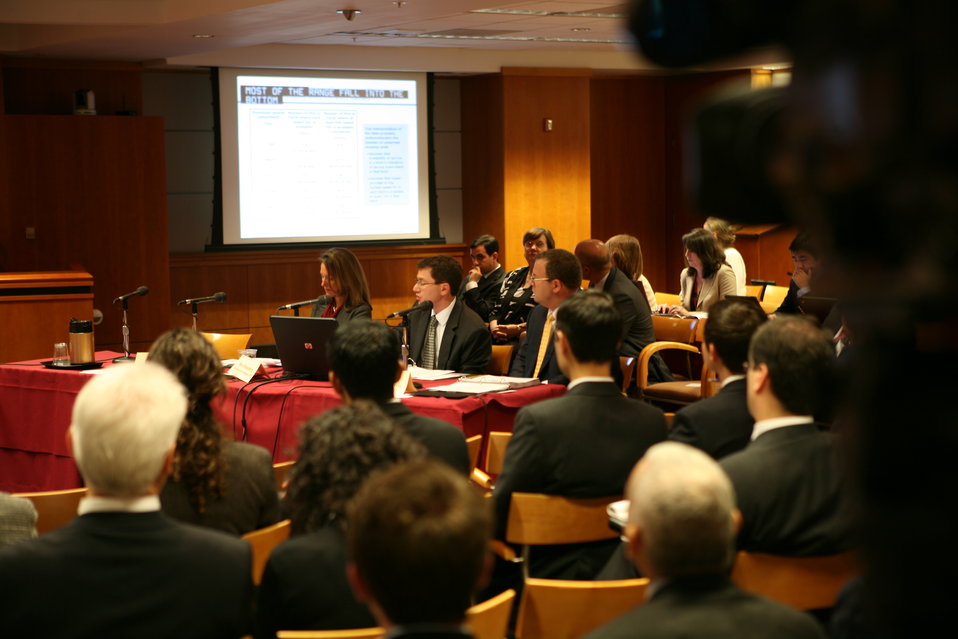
Midterm Review6

Broadband Midterm Review, 9-29-09